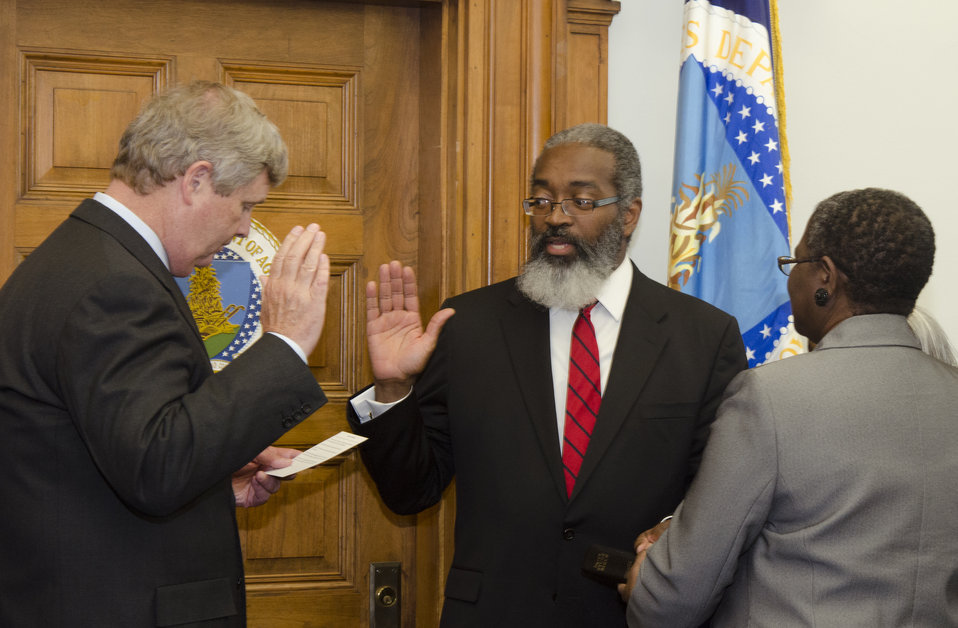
Agriculture Secretary Tom Vilsack swears in of Dr. Greg Parnham as the new Assistant Secretary for Administration at the U.S. Department of Agriculture (USDA) in Washington, D.C. on Wednesday, Jun. 12, 2013. Dr. Parnham was accompanied by family members.